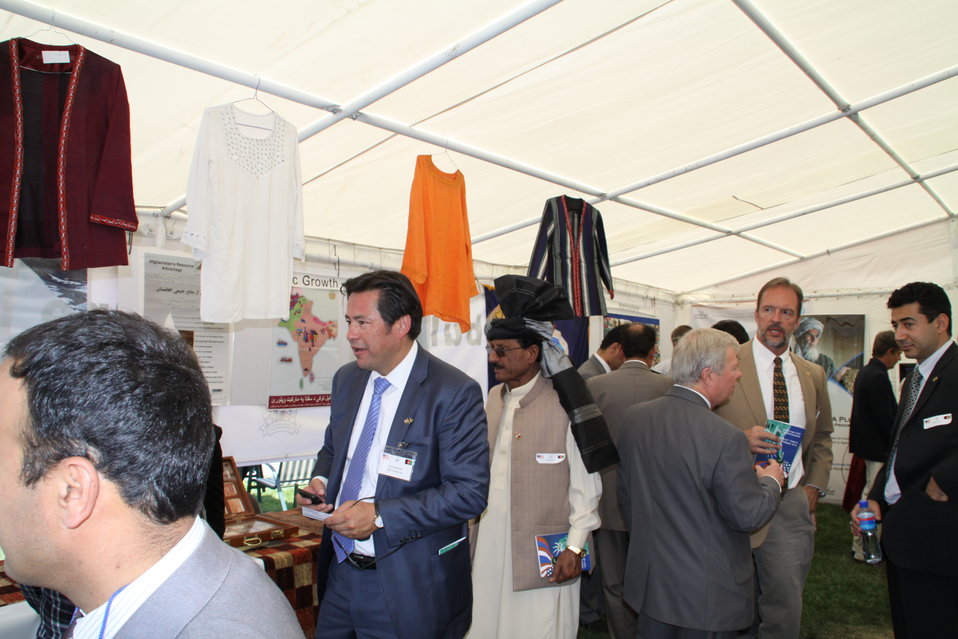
Kabul Official July 4th Celebration